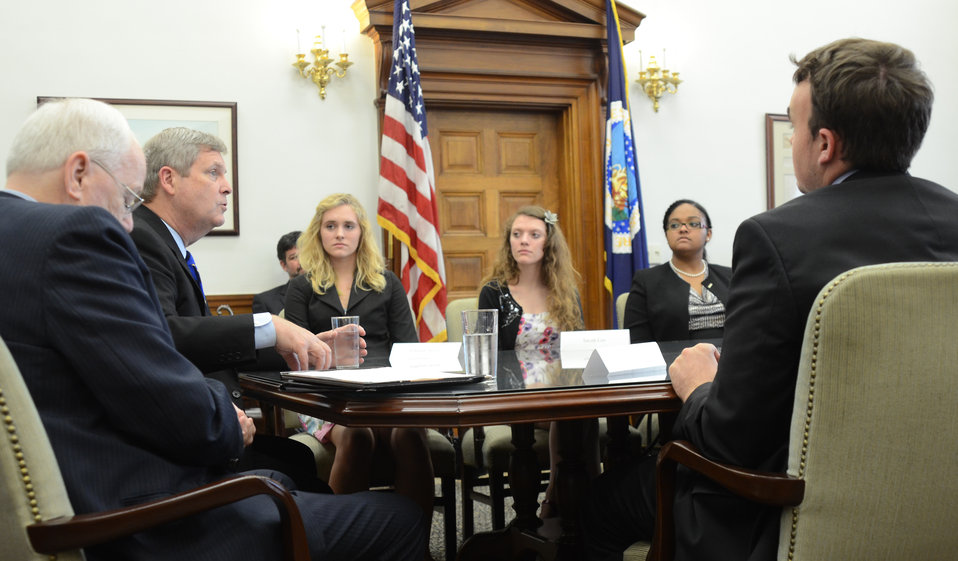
Dr. Kenneth M. Quinn, former U.S. Ambassador to the Kingdom of Cambodia, and Executive Director of the World Food Prize (left) and Agriculture Secretary Tom Vilsack (right) talk with Wallace Carver interns at the Whitten Building, U.S. Department of Agriculture in Washington, D.C., on Thursday, June 14, 2012.